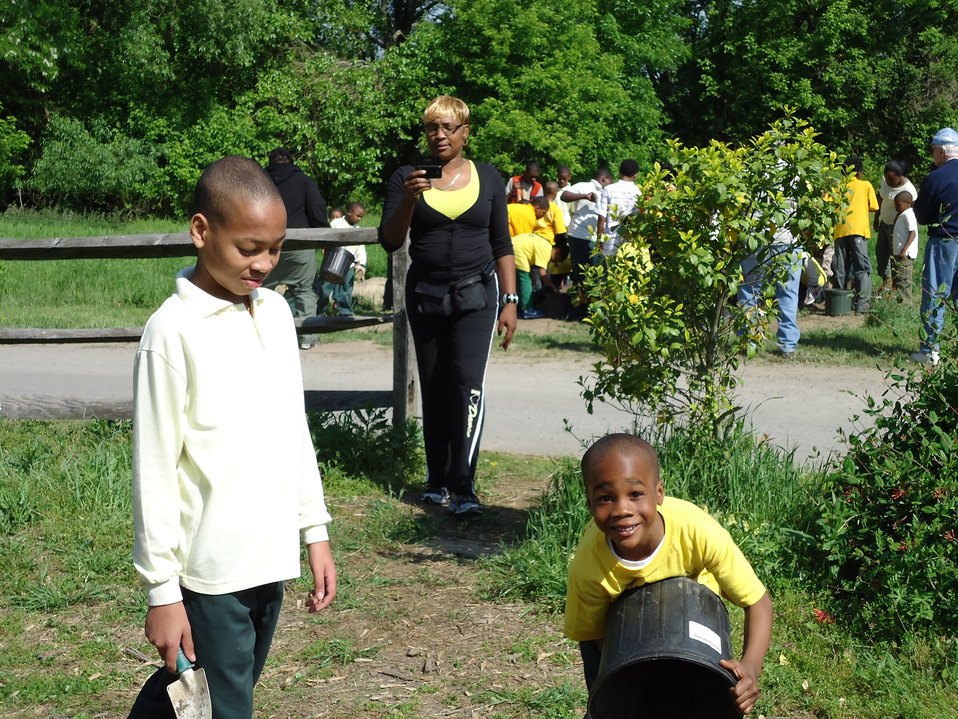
Pollinator garden (PA)

Children helping plant a pollinator garden at John Heinz NWR, Philadelphia, PA.